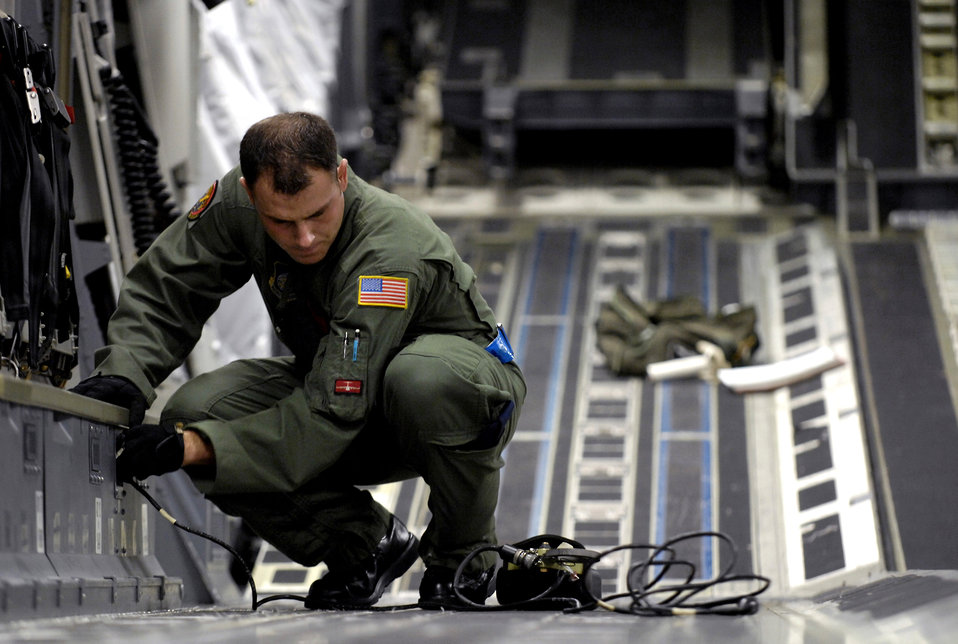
Hickam's C-17s deliver anywhere

Staff Sgt. Ryan Boehm connects a gate release mechanism on his C-17 Globemaster III for an airdrop training mission Jan. 7 at Hickam Air Force Base, Hawaii. Sergeant Boehm is a loadmaster for the 535th Airlift Squadron. The mission is part of a local two-ship airdrop currency training mission.